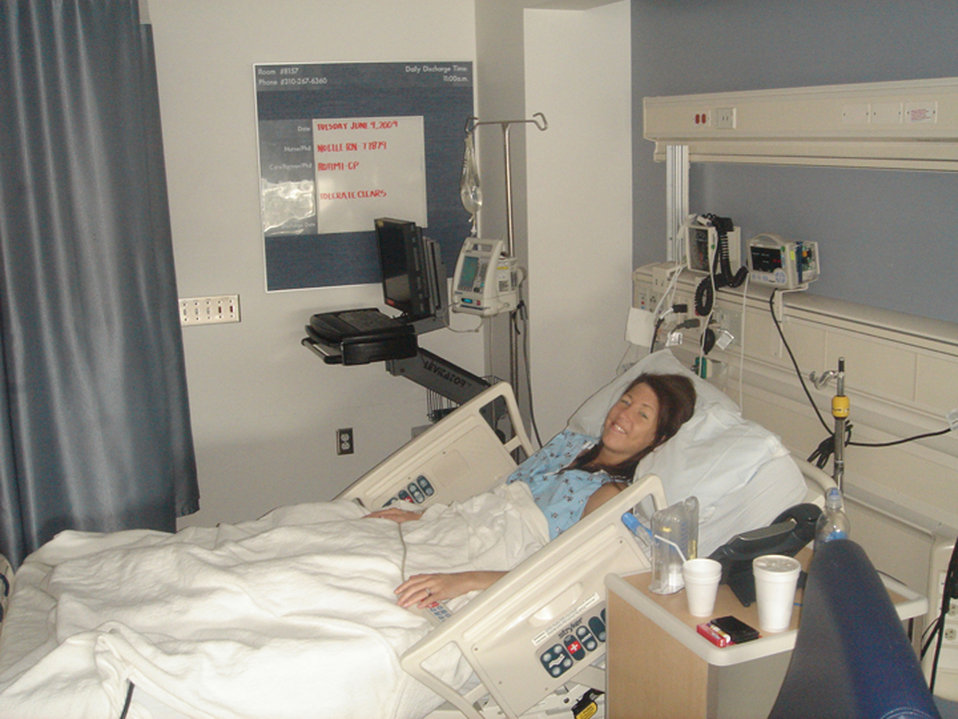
Kidney transplant

Master Sgt. Nicole Lanstrum, an intelligence analyst with the 612th Air Operations Center at Davis-Monthan Air Force Base, Ariz., recovers after successfully donating a kidney to Valinda Jones. Sergeant Lanstrum donated the kidney to Ms. Jones as part of a donor transplant chain.